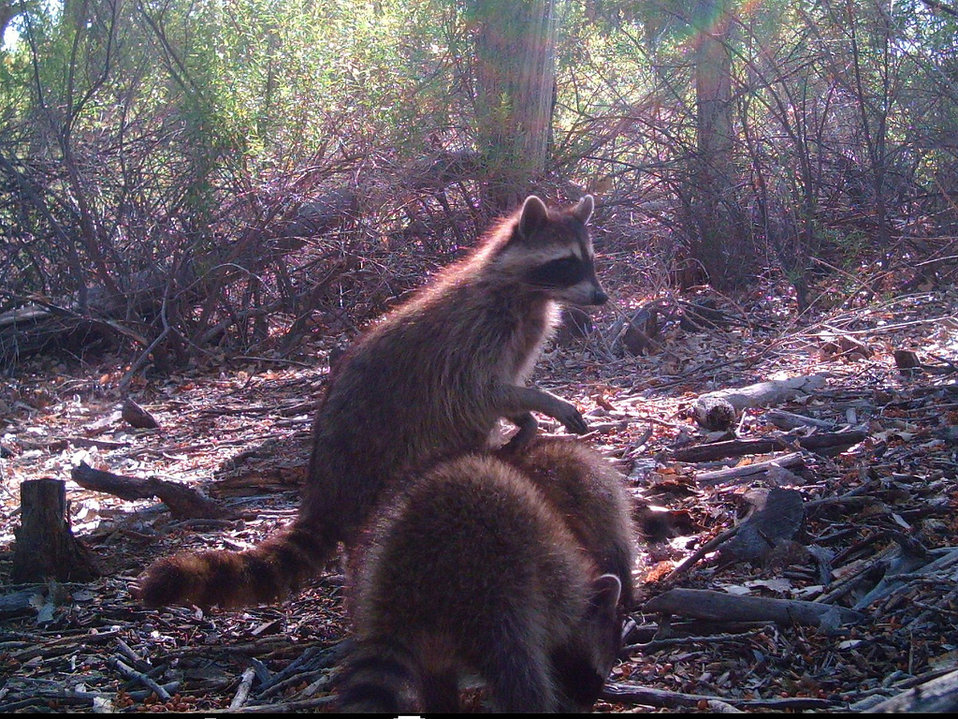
raccoons

Bosque del Apache National Wildlife Refuge, NM
Camera trap project by Matthew Farley, Jennifer Miyashiro and James Stuart
Photo made available by J.N. Stuart, Creative Commons